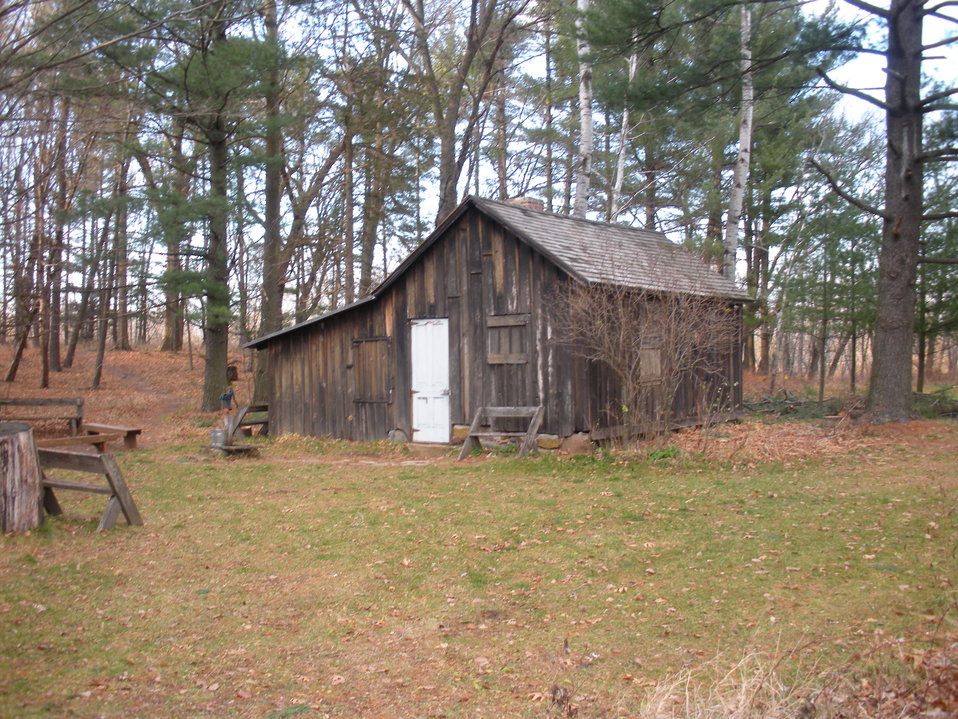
Shack Shot 3

During weekends and breaks from school, Leopold, his wife Estella and their five children lived close to the land. (via www.aldoleopold.org/)